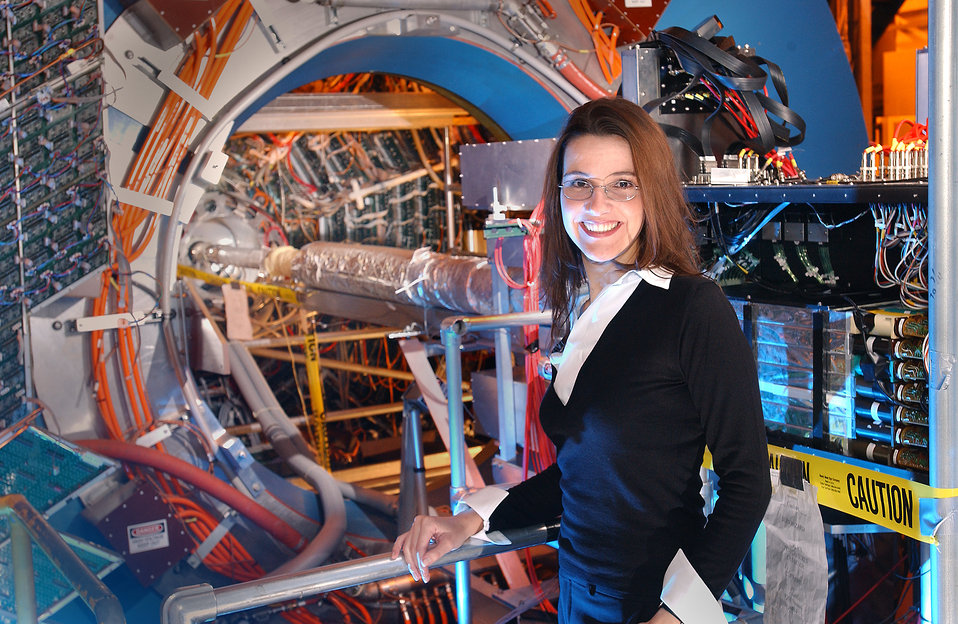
The Star Detector at Brookhaven National Laboratory's Relativistic Heavy Ion Collider (RHIC).